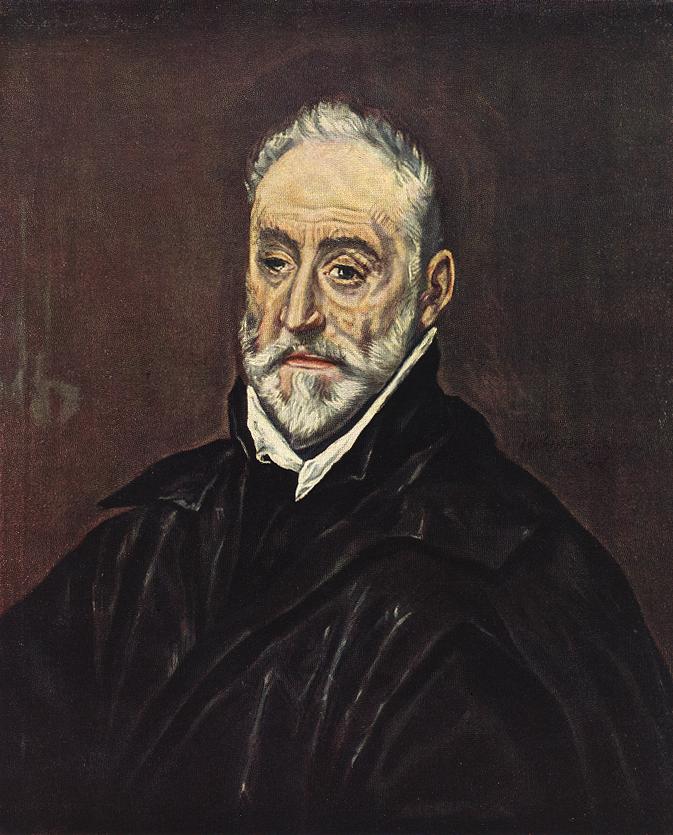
Antonio Covarrubias